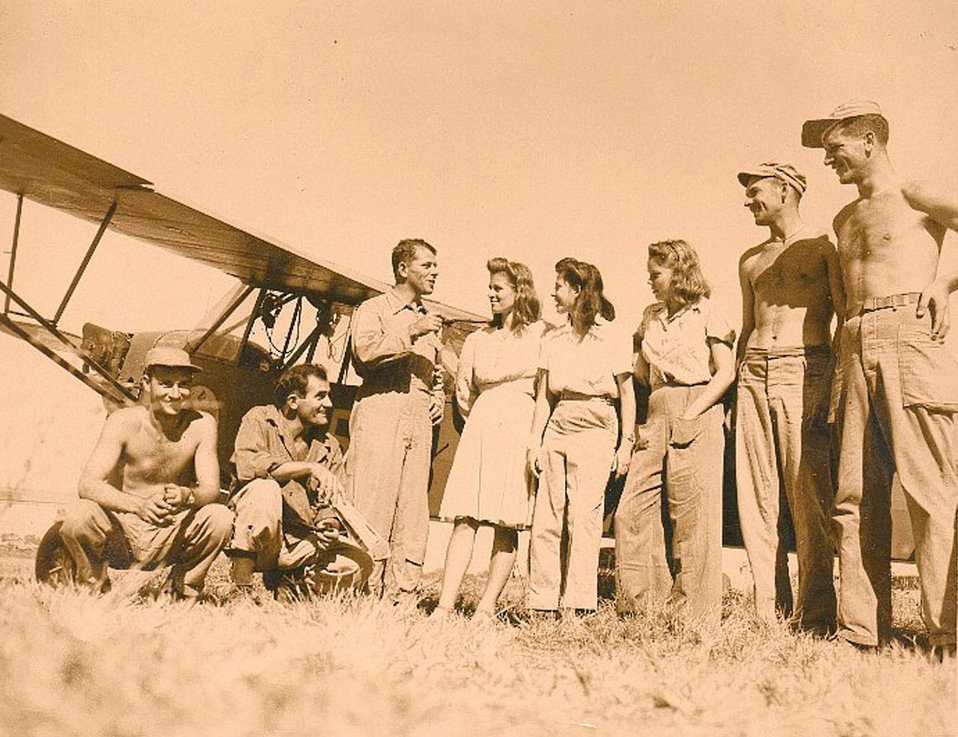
Not-so-common POW: Grandmother tells of imprisonment

MANILA, Philippines -- Liz Lautzenhiser (third from right) and two other former women prisoners of war talk with Army Soldiers in 1945 three weeks after they were liberated from the Santo Tomas Internment Camp here.